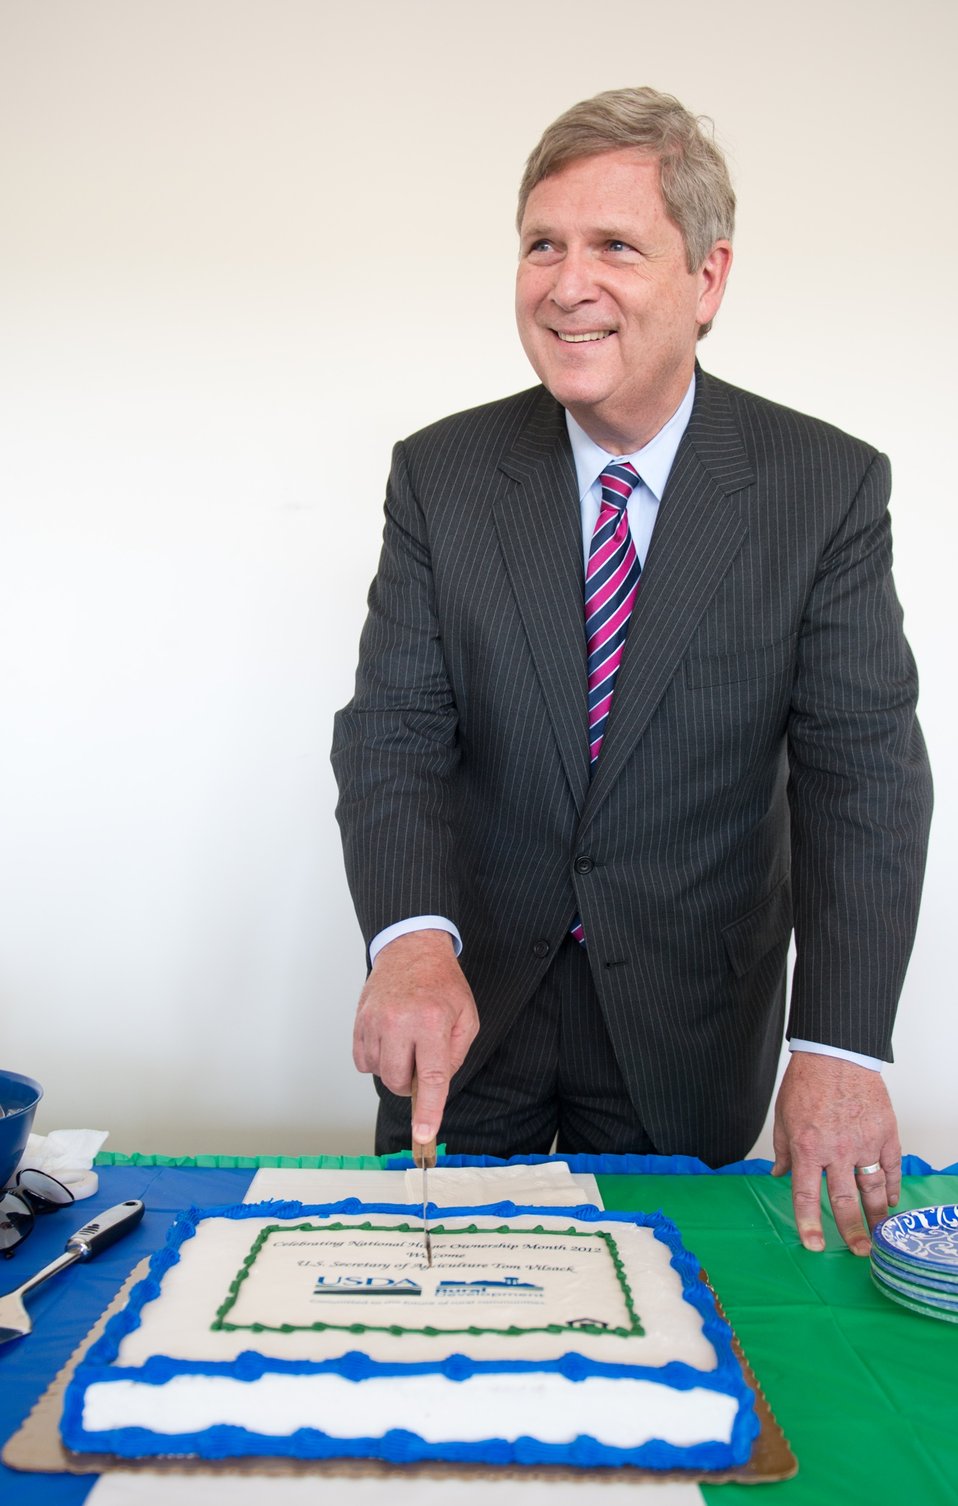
Agriculture Secretary Tom Vilsack smiles as he cuts the cake during a commemoration of National Homeownership Month at Arbor Village in Fayette County, OH on Thursday, June 28, 2012.